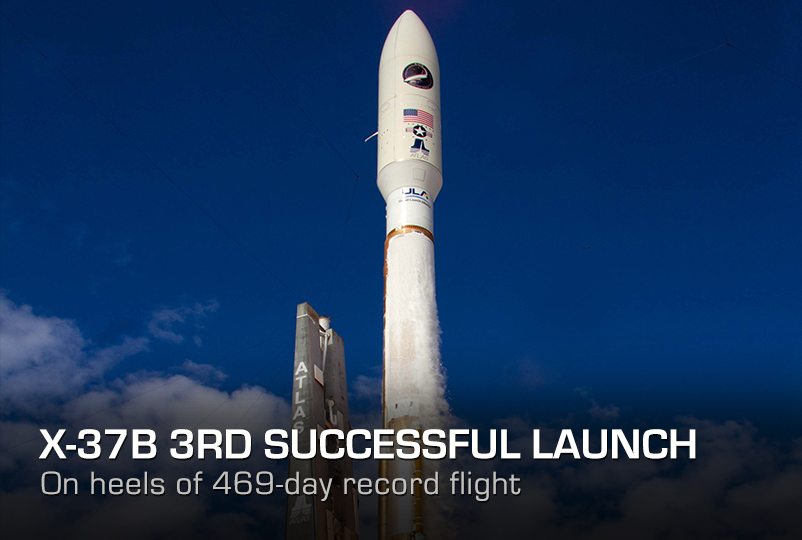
X-37B 3rd successful launch